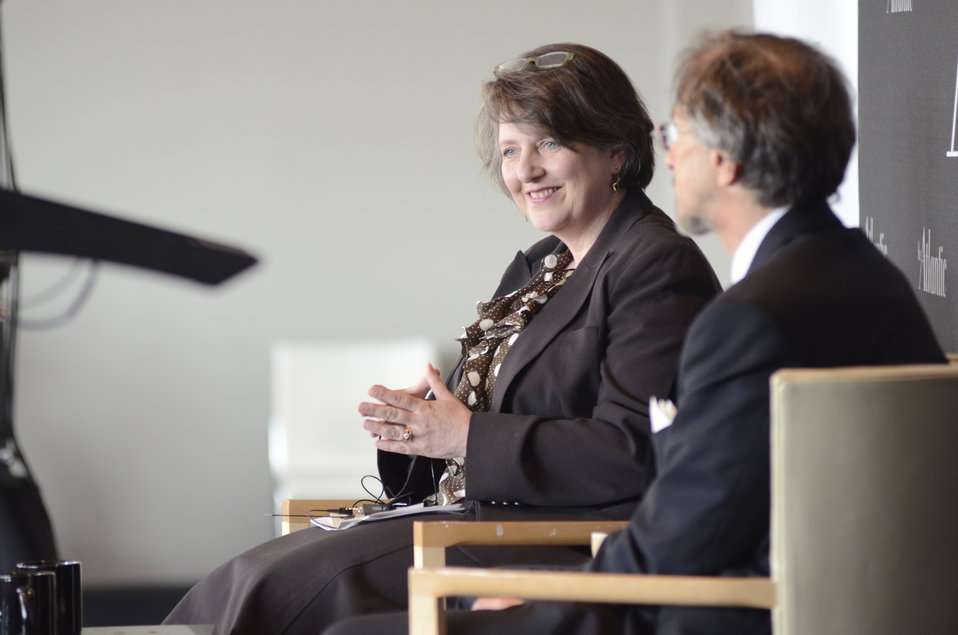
The Atlantic Senior Editor Corby Kummer interviews Agriculture Deputy Secretary Kathleen Merrigan at the 3rd Annual Food Summit held at the W Hotel in Washington, D.C. on Thursday, May 24, 2012. The Food Summit event includes interviews, panel discussions and symposia with leading authorities on issues related to food, food security, and nutrition.